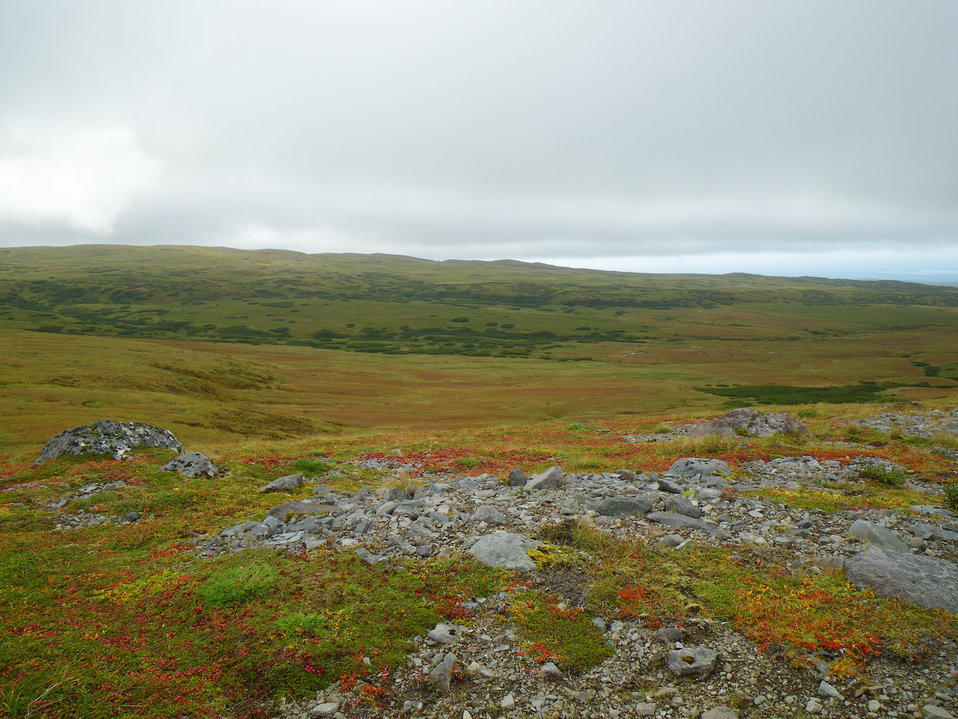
Fall colors

Wilderness near Frosty Peak, Izembek National Wildlife Refuge
Photo by Kristine Sowl,
USFWS, Public Domain